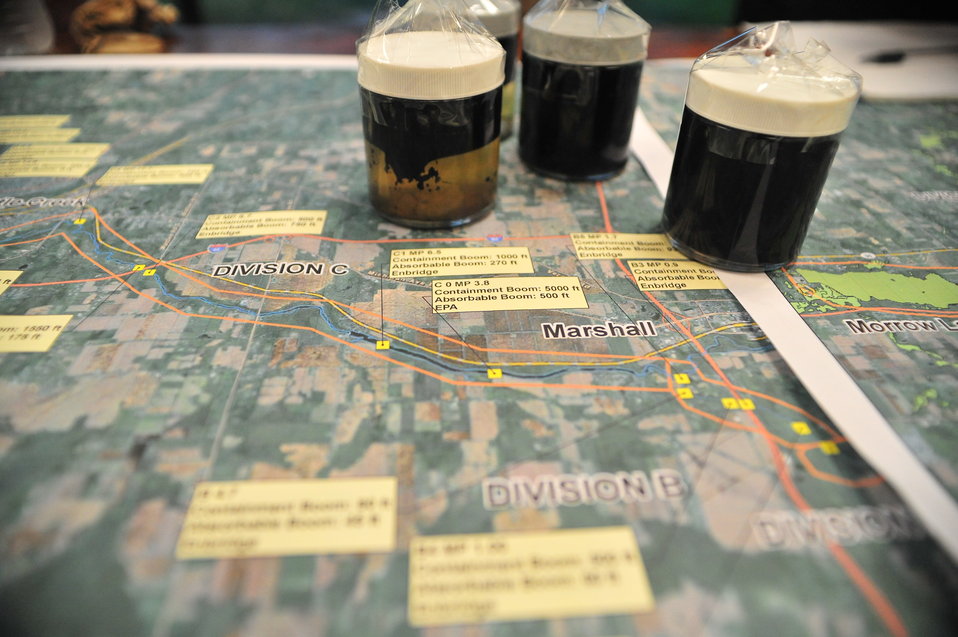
EPA's response to the Enbridge oil spill

August 3, 2010 -- At an open house in the Marshall, Mich, high school residents had a chance to take an up-close look at samples of the oil that has fouled the Kalamazoo River. The open house gave members of the community an opportunity to talk one-on-one with staff from EPA and other government agencies responding to the Enbridge oil spill.